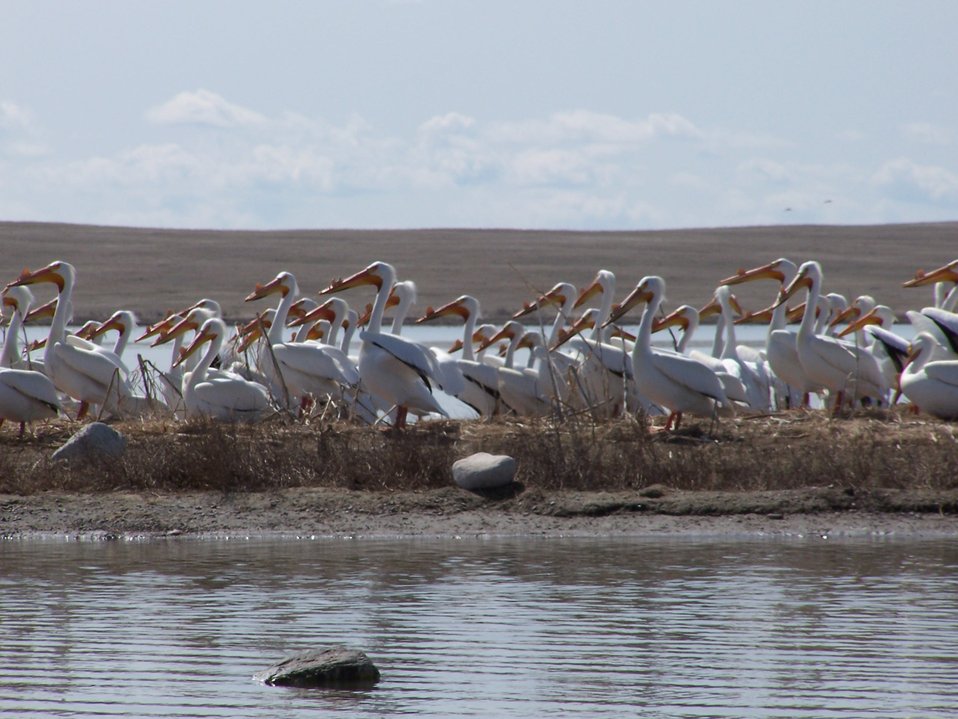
American White Pelicans

American White Pelican nest in Lake Bowdoin on various islands at Bowdoin National Wildlife Refuge in Montana. The favorite island by the pelicans is Woody Island.